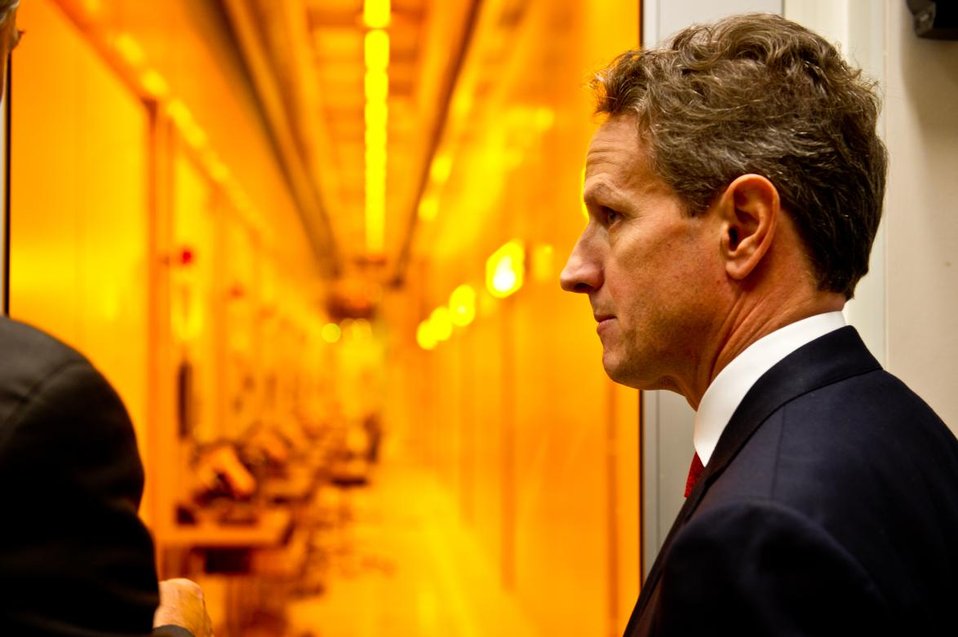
Treasury Secretary Geithner Tours Intel Facilities in Arizona

Treasury Secretary Tim Geithner traveled to Chandler, Arizona for a visit to the sprawling campus where Intel is investing $5 billion to increase its domestic manufacturing capacity.